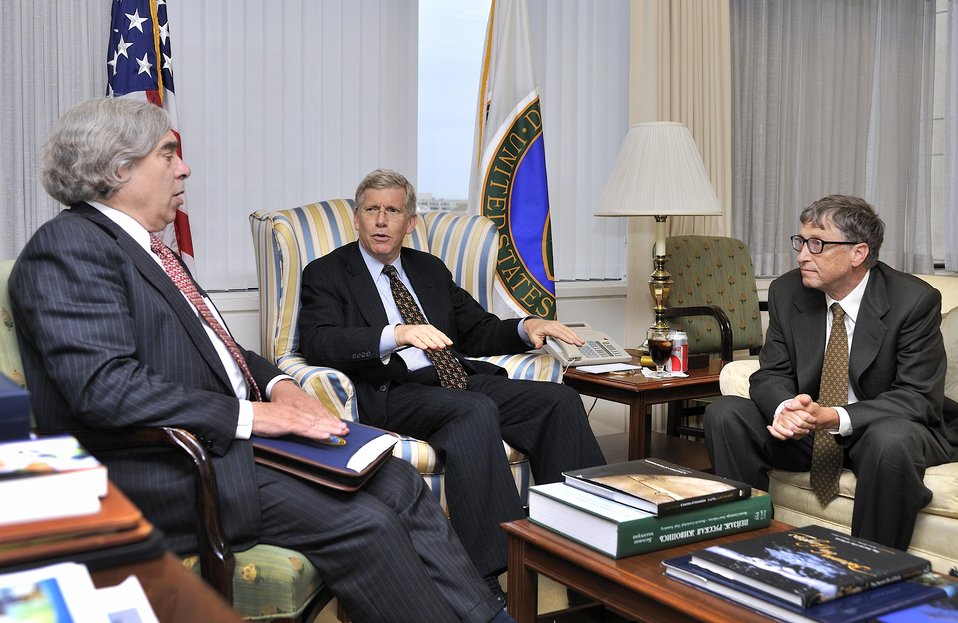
Ken Shipp/DOE Photo

Secretary E.Moniz and Deputy Secretary D. Poneman is visited by William (Bill) H. Gates, founder, technology advisor of Microsoft Corporation at The Department of Energy on October 8, 2013.